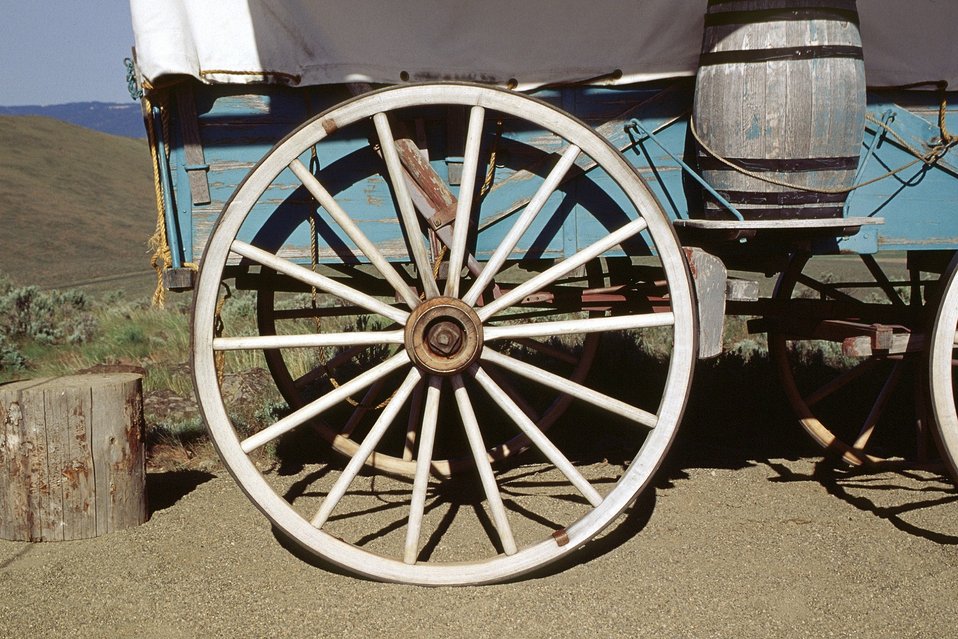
Wheel from covered wagon. NHOTIC 10th Anniversary.